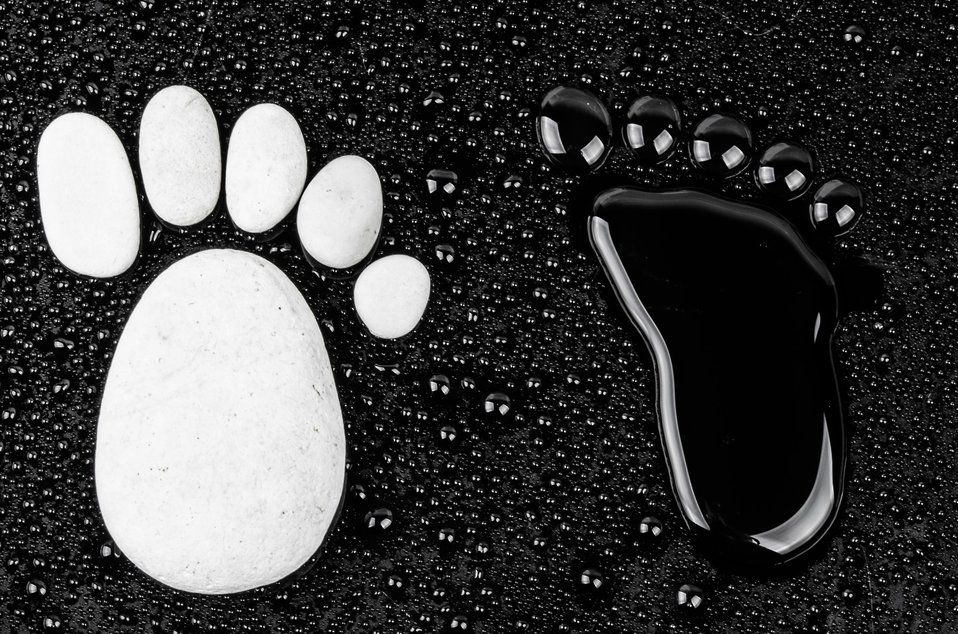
Footprint

The footprint made up of water and rocks on a black background.